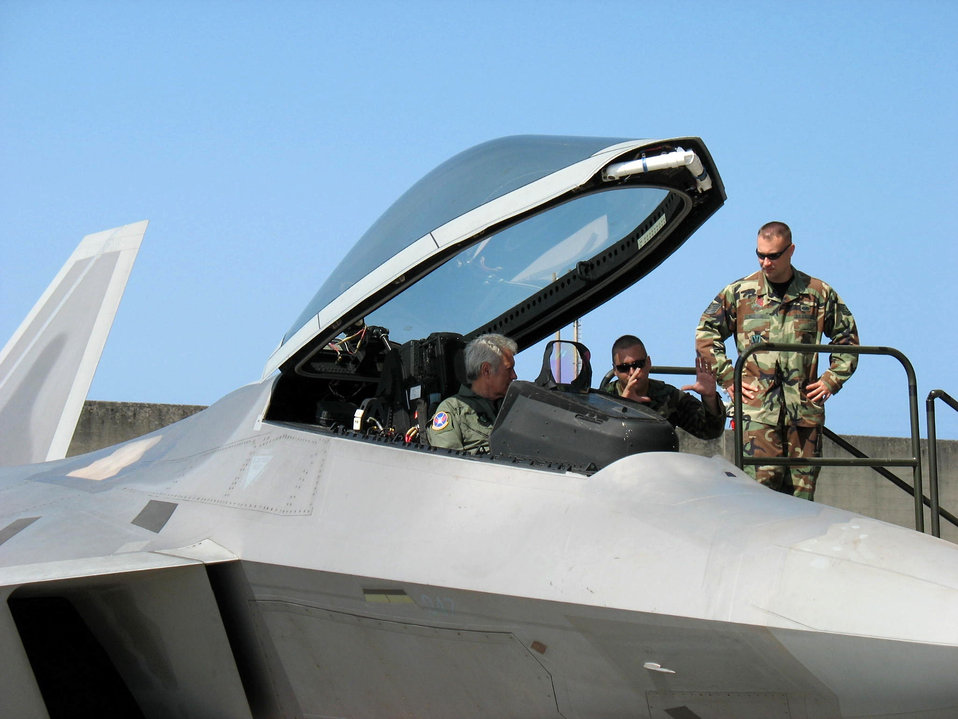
'Jeopardy!' celebrates Air Force's 60th anniversary

Airmen from the 27th Fighter Squadron at Langley Air Force Base, Va., speak with Alex Trebek, host of the TV game show